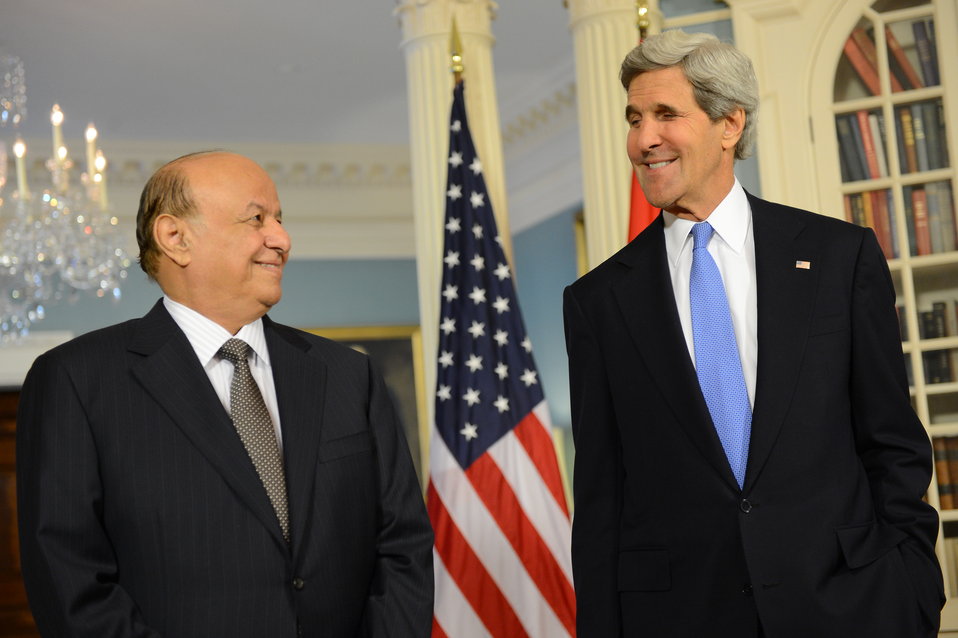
Secretary Kerry and Yemeni President Hadi Address Reporters

U.S. Secretary of State John Kerry and Yemeni President Abdo Rabbo Mansour Hadi address reporters before their bilateral meeting at the U.S. Department of State in Washington, D.C., on July 29, 2013.